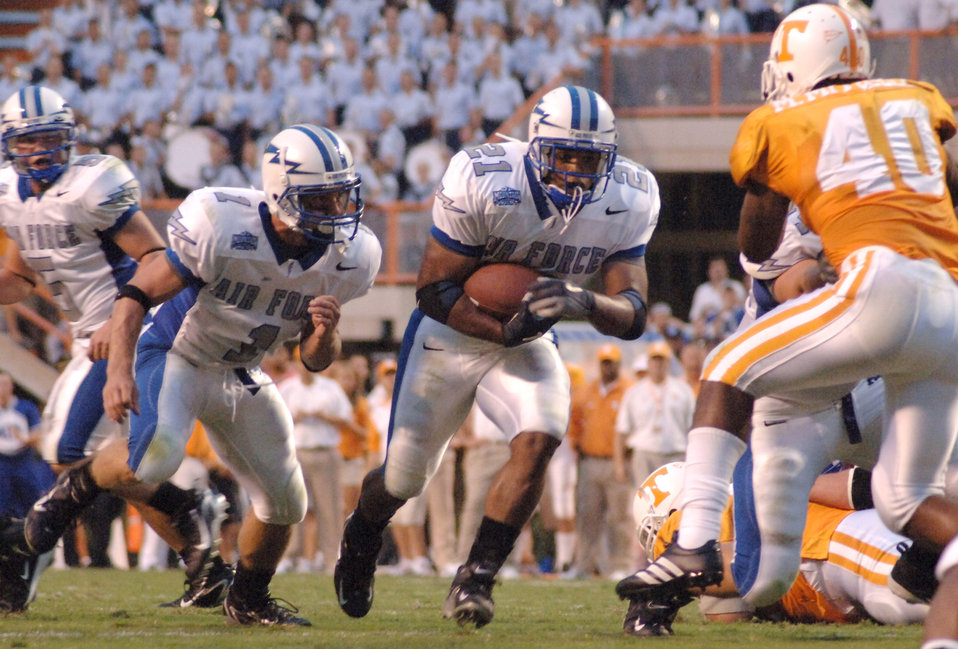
Falcons nearly upset #11 Tennessee in close season opener

Air Force Academy Falcons fullback Ryan Williams (21) prepares to deliver a mid-field blow to Tennessee middle linebacker Marvin Mitchell Sept. 9. The Falcons nearly pulled off an upset over #11 Tennessee, which managed to hold off the cadets for a 31-30 victory.